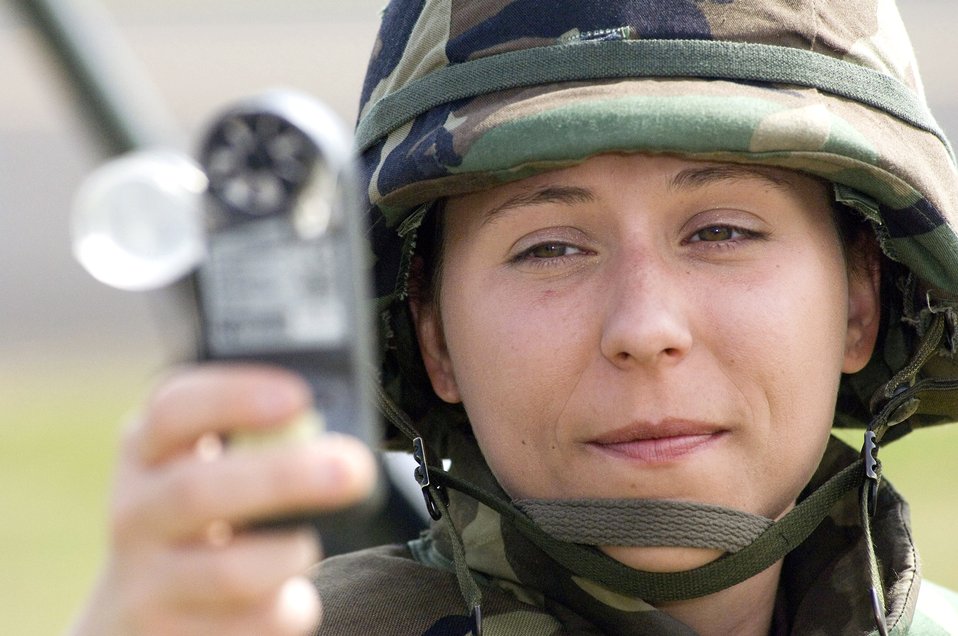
Air Force provides Army's weather support

Tech. Sgt. Jessica Boyle gathers weather data during field training June 21 at Wiesbaden Army Airfield, Germany. A native of Swanzey, N.H., Sergeant Boyle is a combat weather forecaster with Wiesbaden's 7th Weather Squadron, Detachment 6 in southwest Germany.